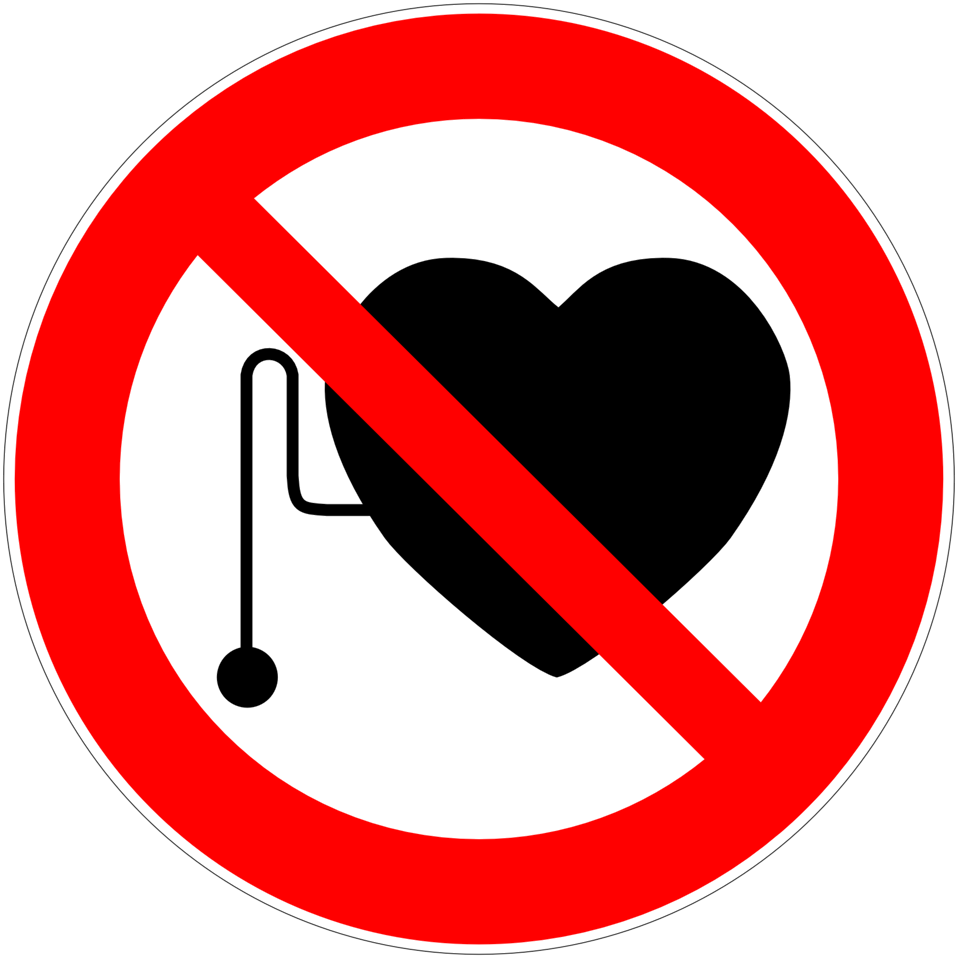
Deutsch: Verbot für Personen mit Herzschrittmacher, Verbotszeichen D-P011 nach DIN 4844-2 No persons with pacemakers, prohibition sign D-P011 according to German standard DIN 4844-2